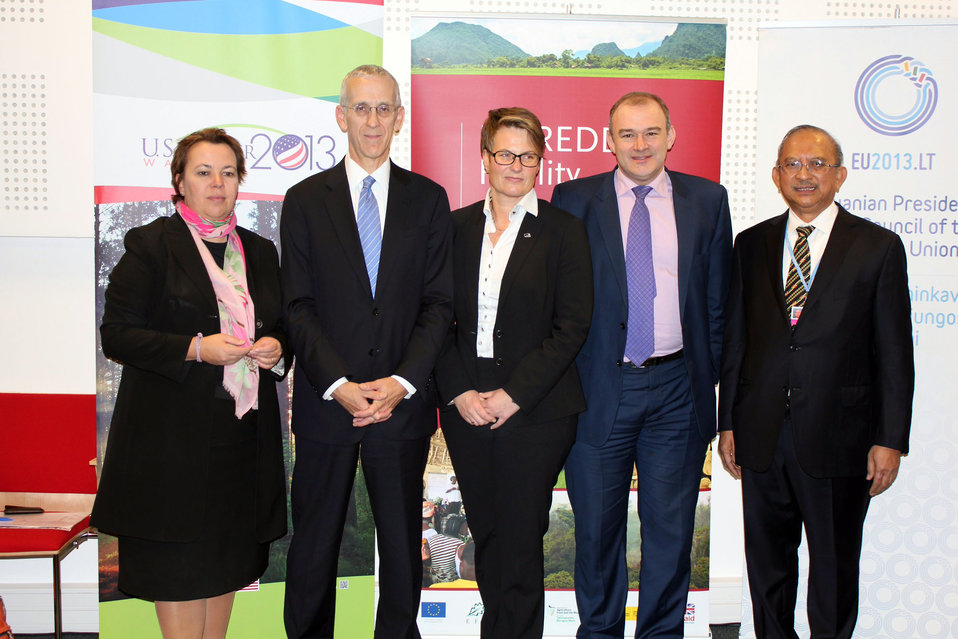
Representatives From U.S., U.K., Germany, Norway, and Indonesia Announce Funding for the Initiative for Sustainable Forest Landscapes

Representatives from the U.S., U.K., Germany, Norway, and Indonesia pose for a photo at the announcement of more than $250 million to launch the Initiative for Sustainable Forest Landscapes at the U.S. Center at the 19th Session of the Conference of the Parties to the UN Framework Convention on Climate Change (COP19) in Warsaw, Poland, on November 20, 2013. The U.S. has announced $25M to support the initiative. [State Department photo/ Public Domain]

Left to Right: German Parliamentary State Secretary to the Federal Minister for the Environment, Nature Conservation, and Nuclear Power Ursula Heinen-Esser; U.S. Special Envoy for Climate Change Todd Stern; Norwegian Minister for Climate and the Environment Tine Sundtoft; U.K. Secretary of State for Energy and Climate Change Edward Davey; Indonesian Deputy Minister/Head of Prime Minister’s Delivery Unit Heru Prasetyo